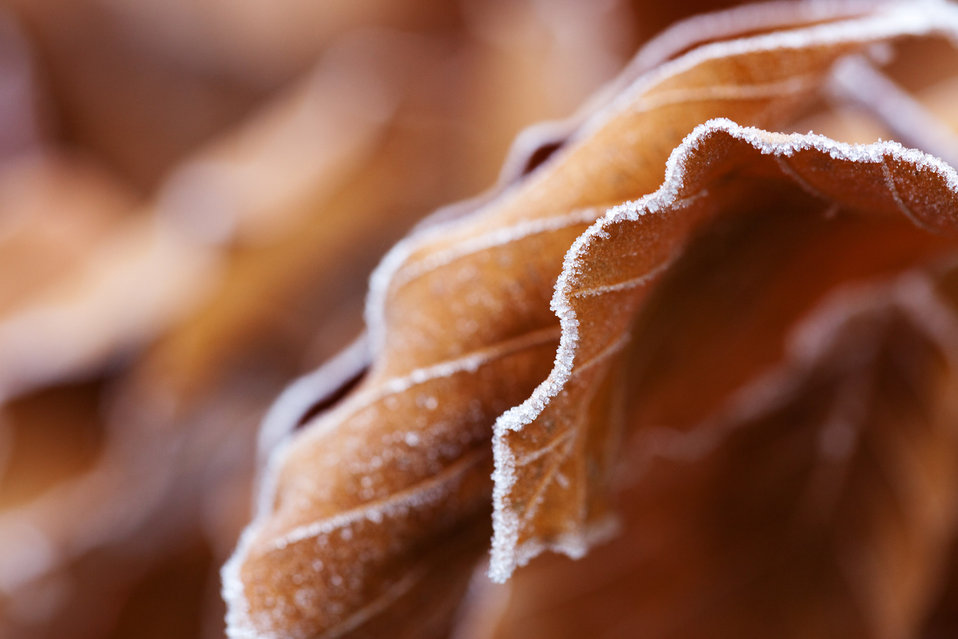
Frozen brown leaves

Frozen brown oak leaves.